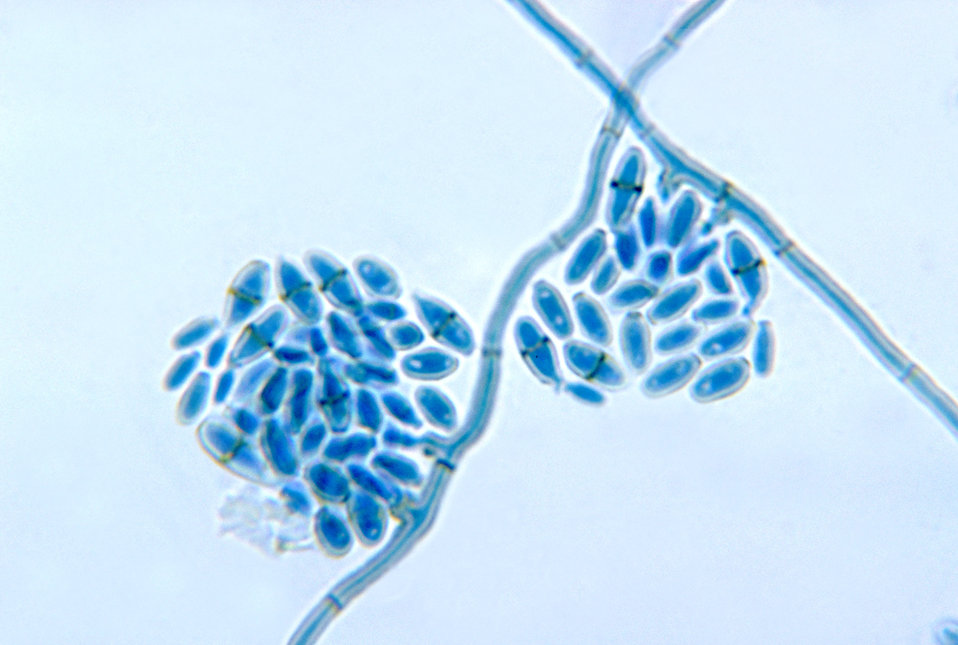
This photomicrograph reveals the conidiophores with conidia of the fungus Cladosporium werneckii from a slide culture.